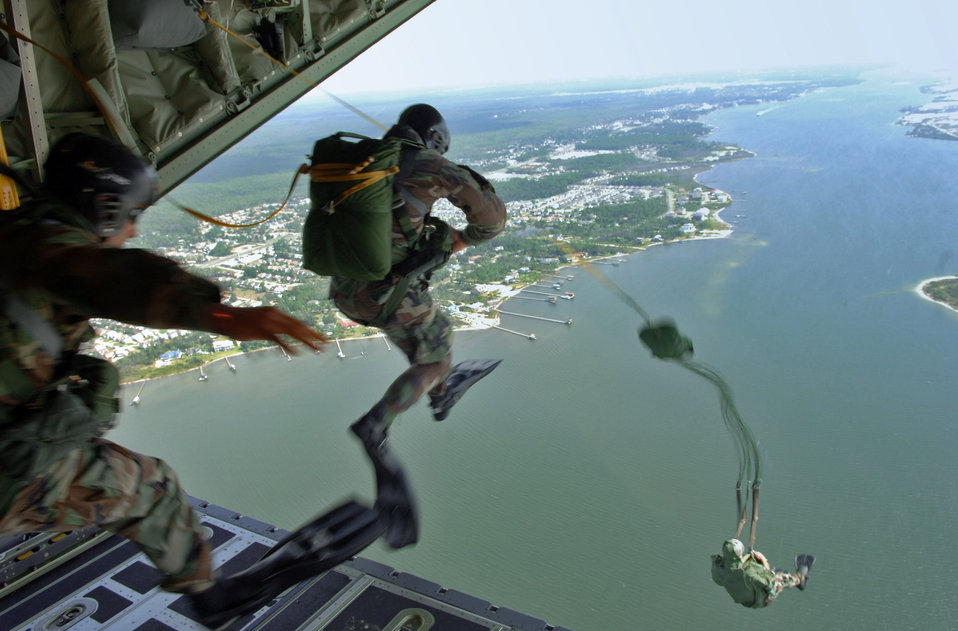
Here we go!

Airmen from the 720th Special Tactics Group at Hurlburt Field, Fla., jump out of a C-130 Hercules Oct. 4 over the Florida coastline during a water rescue exercise. The C-130 was from the 41st Airlift Squadron at Little Rock Air Force Base, Ark.